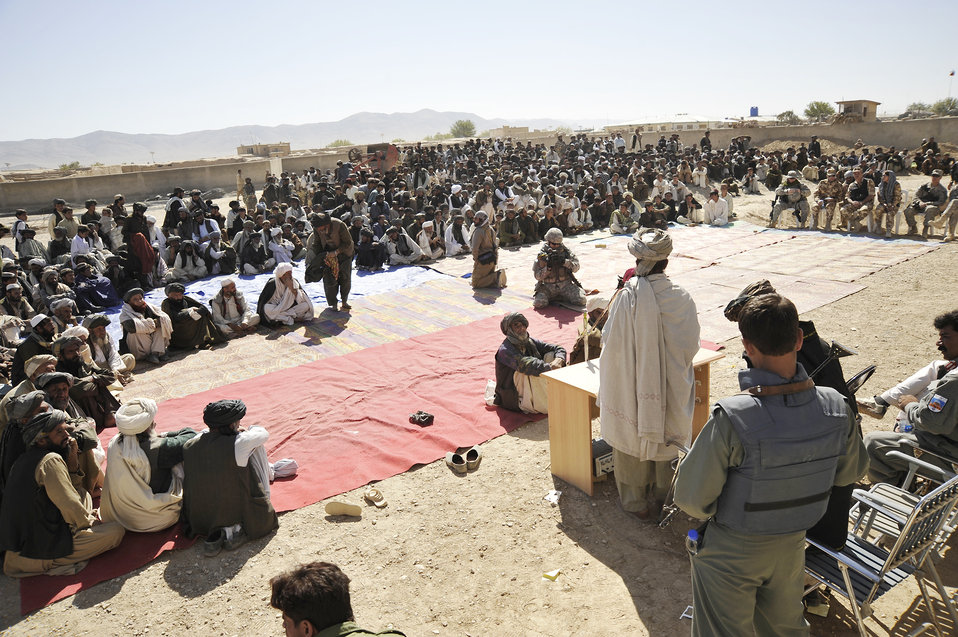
American servicemembers breaks ground on girl's high school in Afghanistan

U.S. military members, civilian agencies, Afghan officials and the people of Zabul province attend the ground breaking ceremony for the first high school for females Oct. 22, 2009, at Shajoy, Afghanistan.